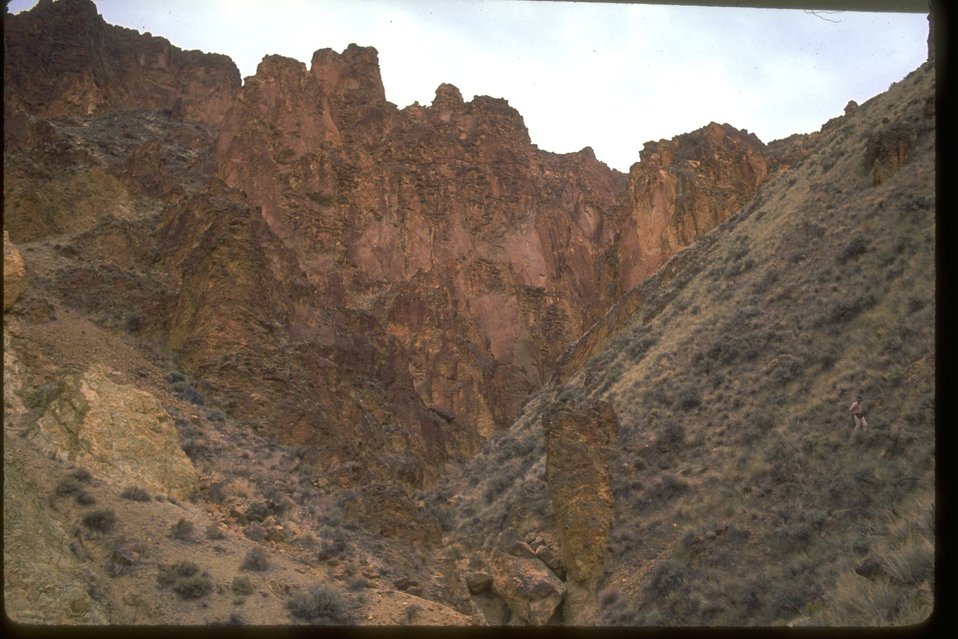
Leslie Gulch Series: Ravine.